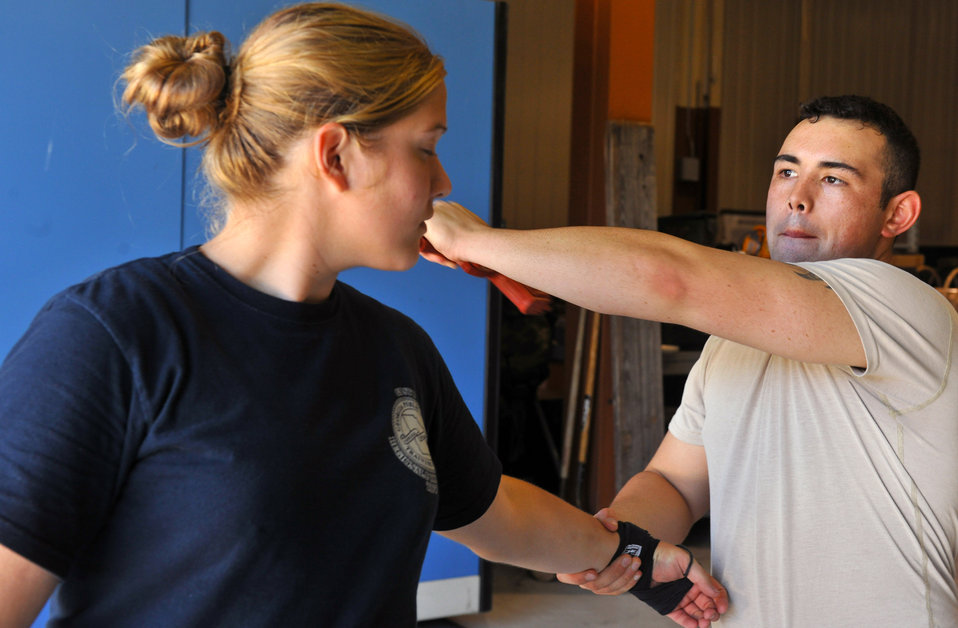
Airmen teach Krav Maga techniques to local law enforcers

Senior Airman Krystoffer Miller demonstrates to Felicia Pelleteri what attack to perform after disarming an enemy Oct. 14, 2010, at Moody Air Force Base, Ga. Security Forces Airmen taught Krav Maga to Lowndes County Sheriff's Department deputies and Special Weapons and Tactics members. Airman Miller is a 822nd Base Defense Squadron fire team leader. Ms. Pelleteri is a Lowndes County Sheriff's Department deputy.